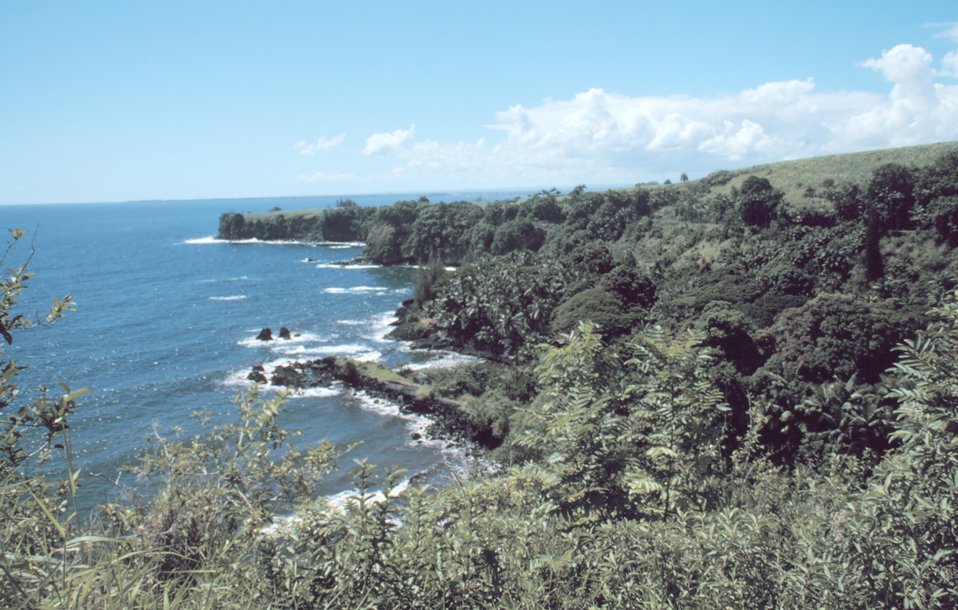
A coastal scene north of Hilo